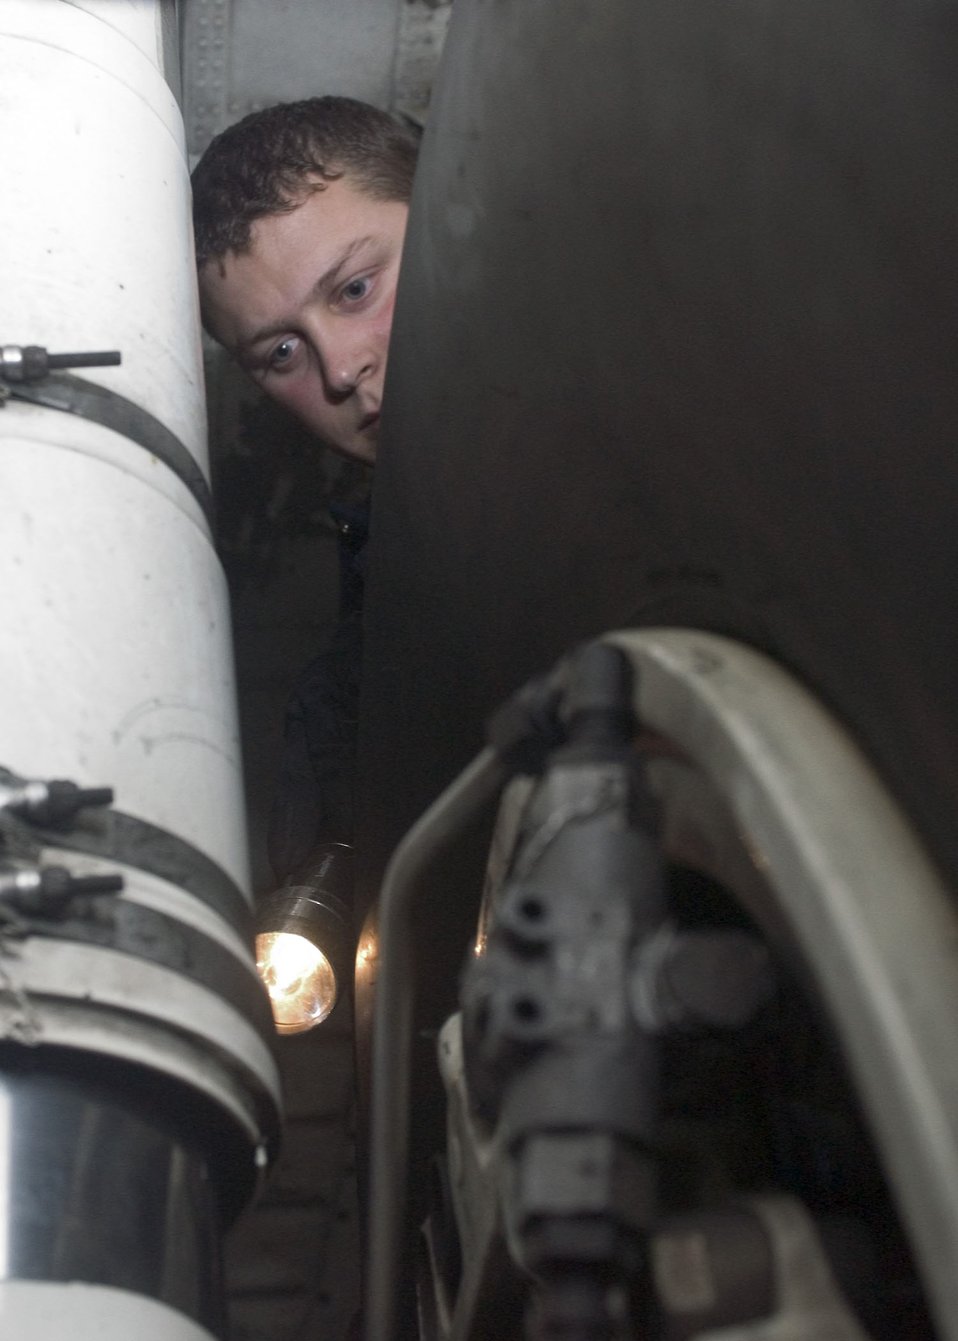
All night long

RAMSTEIN AIR BASE, Germany -- Working the night shift, Staff Sgt. Toby Neal inspects the landing gear during a check on a C-130 Hercules here. Maintenance is performed throughout the night to prepare aircraft to fly the next day. Sergeant Neal is a crew chief assigned to the 86th Aircraft Maintenance Squadron.